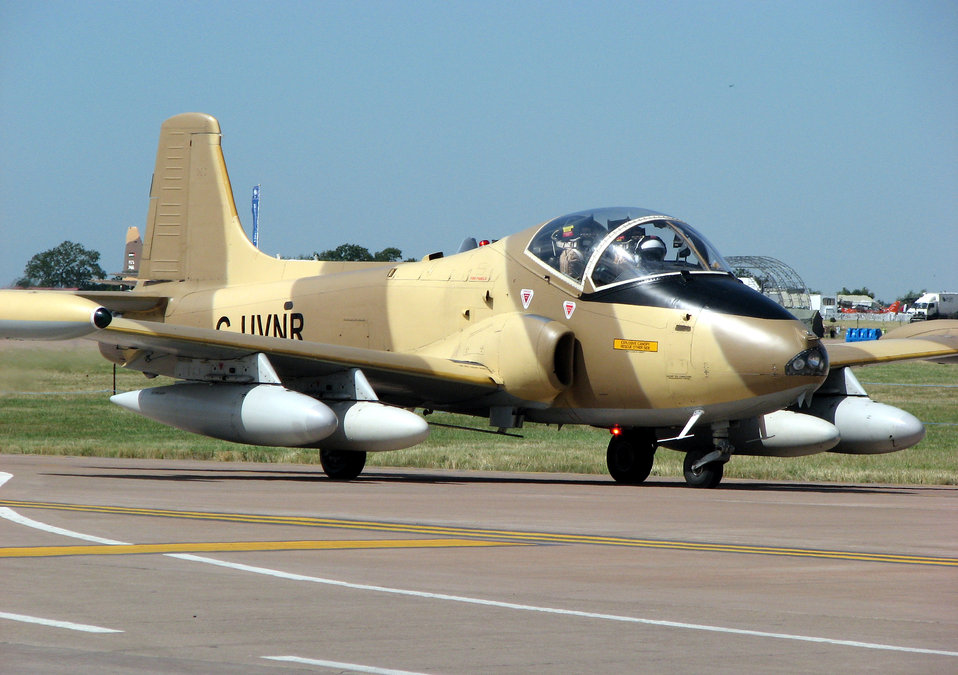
Bac.167.strikemaster.mk87.arp